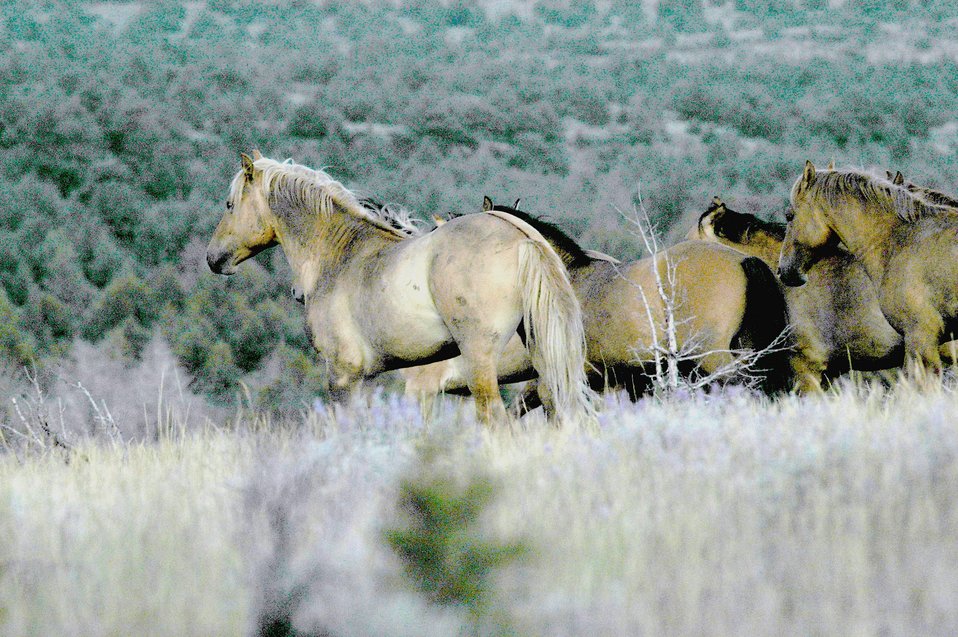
Kiger horses roam the plateaus of the Kiger Wildhorse Herd Management Area near Steens Mountain in Southeastern Oregon.